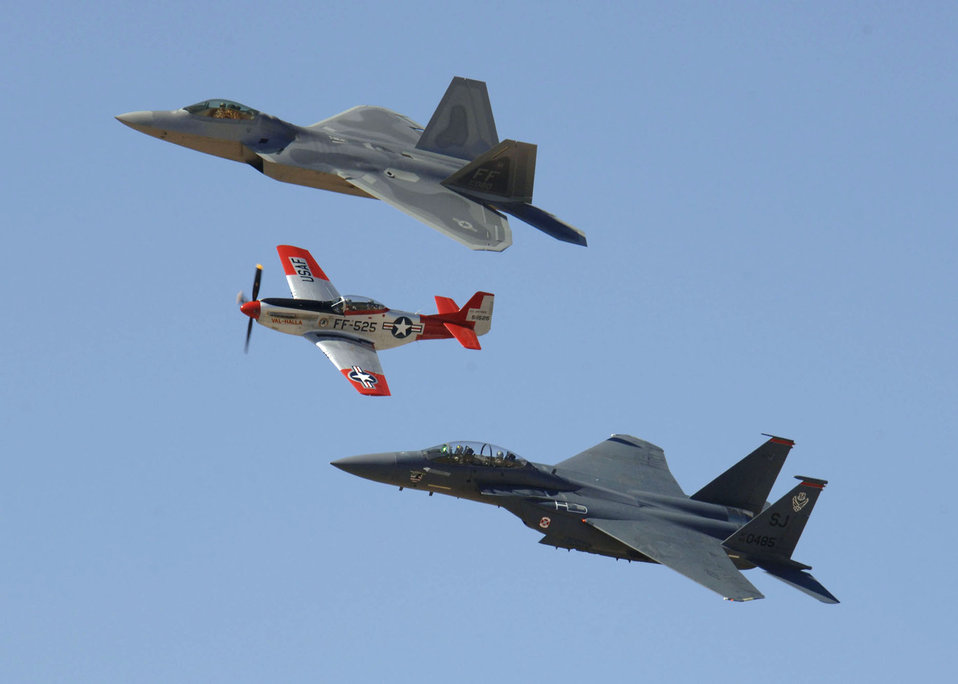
Heritage Conference mixes old with new

An F-22 Raptor, a P-51 Mustang and an F-15E Strike Eagle fly in formation March 3 during the 2007 Heritage Conference at Davis-Monthan Air Force Base, Ariz. The conference provides an opportunity for Air Combat Command demonstration pilots to train together with modern and historic military aircraft in preparation for the upcoming air-show season.